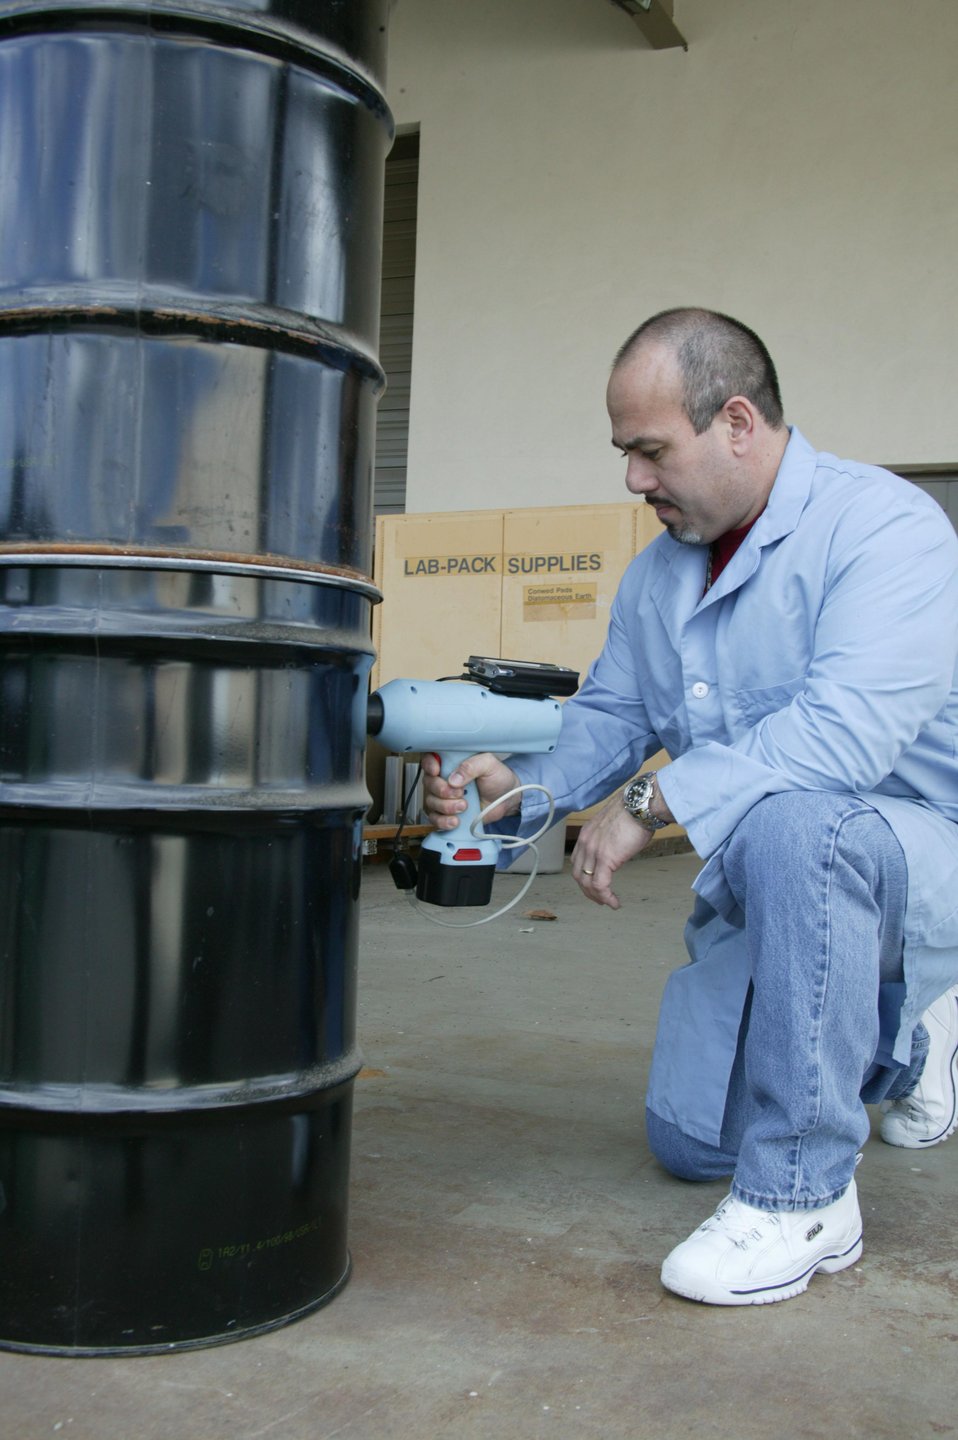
TRAINING IN THE USE OF ACOUSTIC INSPECTION DEVICE AT THE HAZARDOUS MATERIALS MANAGEMENT AND EMERGENCY TRAINING CENTER (HAMMER).

THE ACOUSTIC INSPECTION DEVICE (AID) IS A PORTABLE, HANDHELD DEVICE THAT EXAMINES AND INSPECTS CONTAINERS NON-INVASIVELY. RESEACHERS AT PACIFIC NORTHWEST NATIONAL LABORATORY ARE DEVELOPING AID TO ASSIST THE LAW ENFORCEMENT COMMUNITY, THE MILITARY, AND INTERNATIONAL TREATY CONVENTIONS IN THEIR EFFORTS TO SUPPORT HOMELAND DEFENSE, DETER ILLICIT DRUG MANUFACTURING, STOP SMUGGLING, COLLECT TAXES AND TARIFFS, EFFECTIVELY MAINTAIN INVENTORIES AND VERIFY TREATY COMPLIANCE.